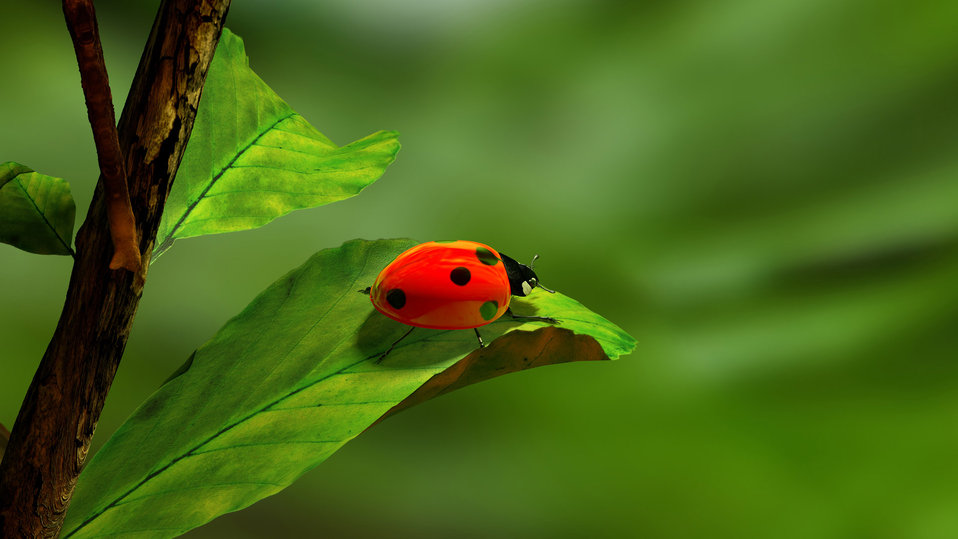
Ladybird on a leaf.